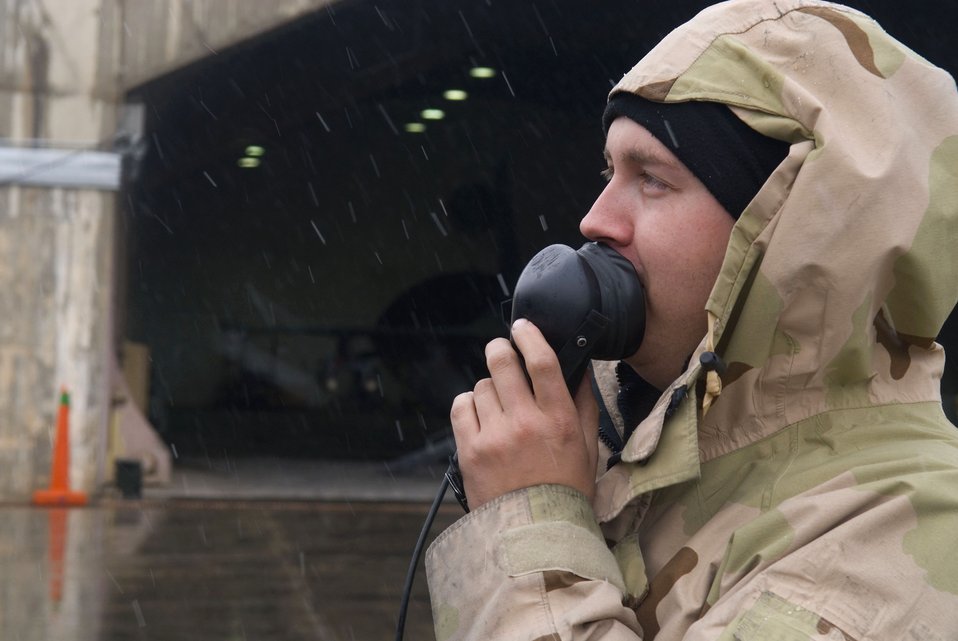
Through snow and rain

Staff Sgt. Jeremy Crombie speaks into a radio headset to check the status of avionics operations Jan. 11 at Balad Air Base, Iraq. The avionics system gives a pilot the capability to use the Joint Direct Attack Munitions on the F-16 Fighting Falcon. Sergeant Crombie is a 332nd Expeditionary Aircraft Maintenance Unit avionics technician deployed from Spangdahlem Air Base, Germany.